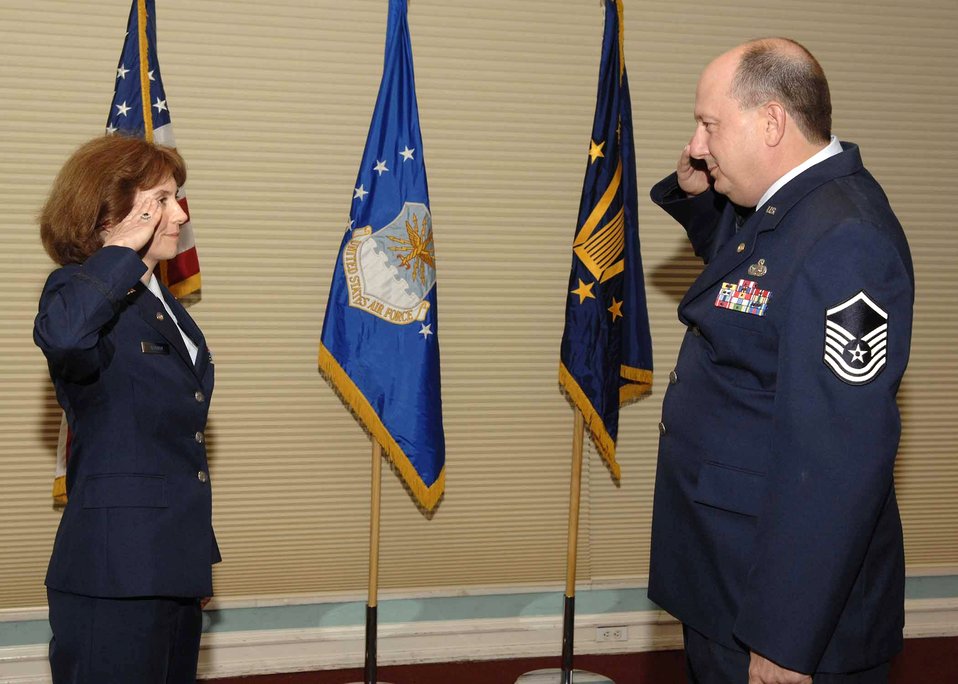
Major, NCO reconnect for retirement ceremony

At her retirement ceremony recently, Maj. Alicia Graham reserved her last salute for retired Master Sgt. Jack Pio, who returned the traditional silver dollar she had given him in 1986 to commemorate her first salute.